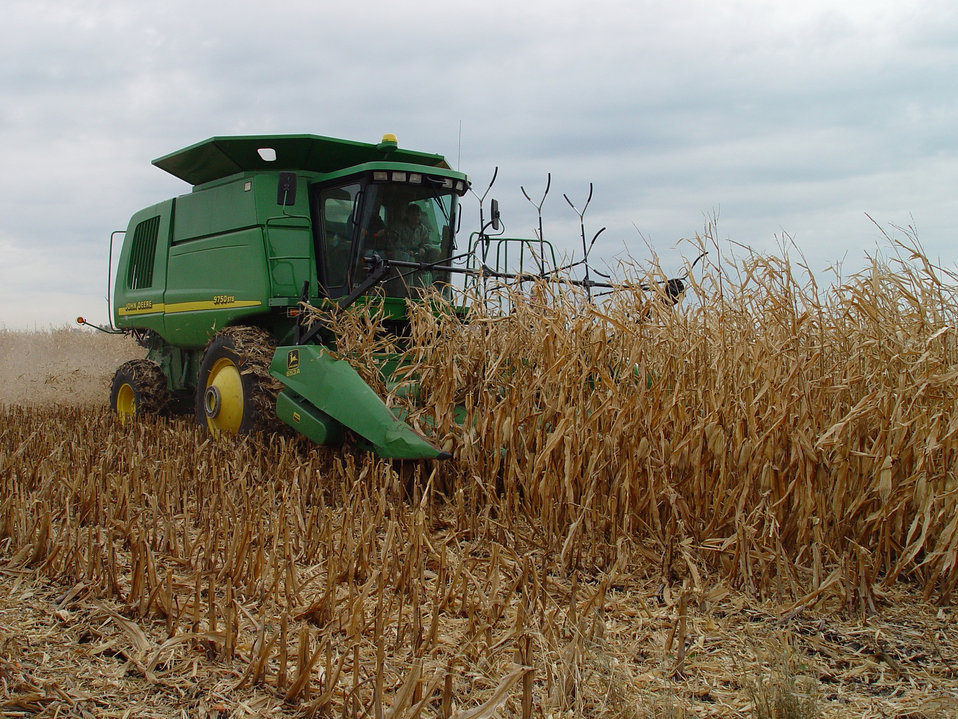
Corn stover harvest is part of the Idaho National Laboratory bioenergy program.